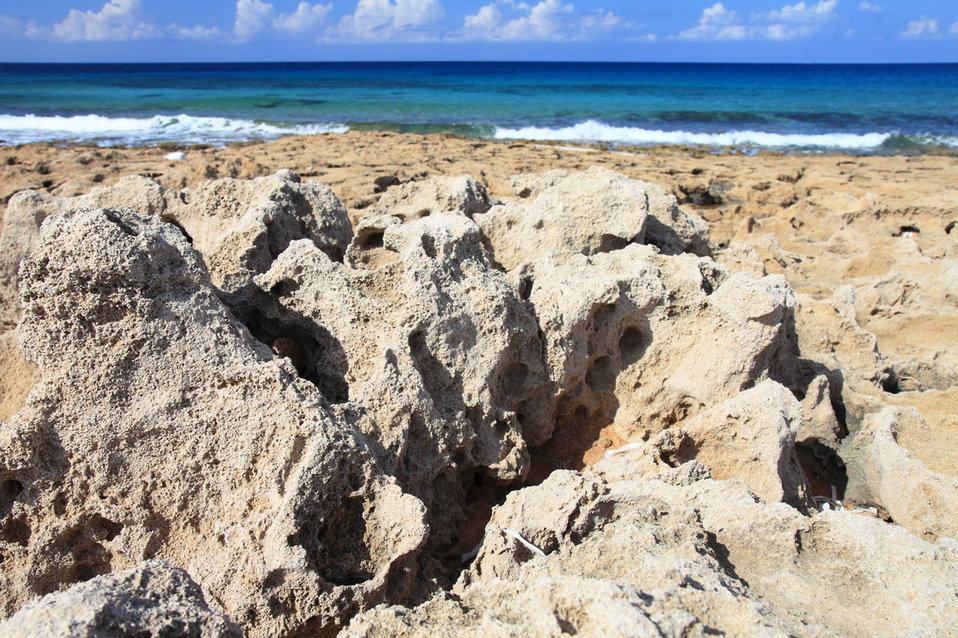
Rocky coast

Rocks on coast with sea in the background.